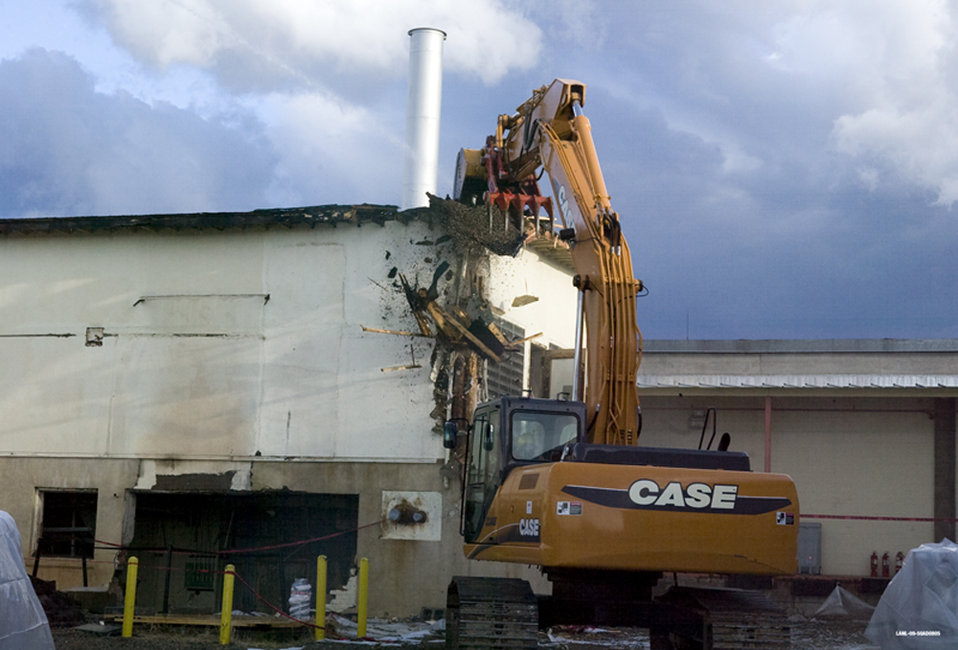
LANL #3 - Building 21-166 demo

Building 21-166 was torn down in October 2009.